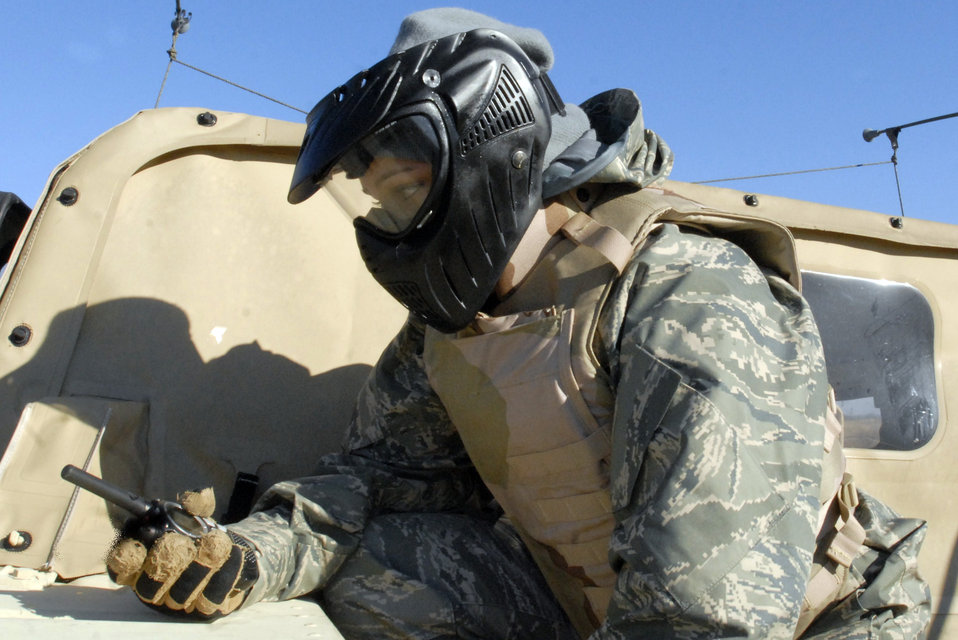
Patriot exercise teaches ISR skills to enhance situational awareness

Senior Airman Alyssa Gomez waits for word via radio from her colleagues on when to proceed during a
reconnaissance mission during Patriot 7 Dec. 10, 2009, at Fort Pickett, Va. About 30 Air Force, joint and
coalition trainees conducted integrated sensor, aircraft and counterterrorism training to learn how to make more dynamic decisions on the battlefield. Airman Gomez is from 99th Security Forces Squadron ground combat, Nellis Air Force Base, Nev.